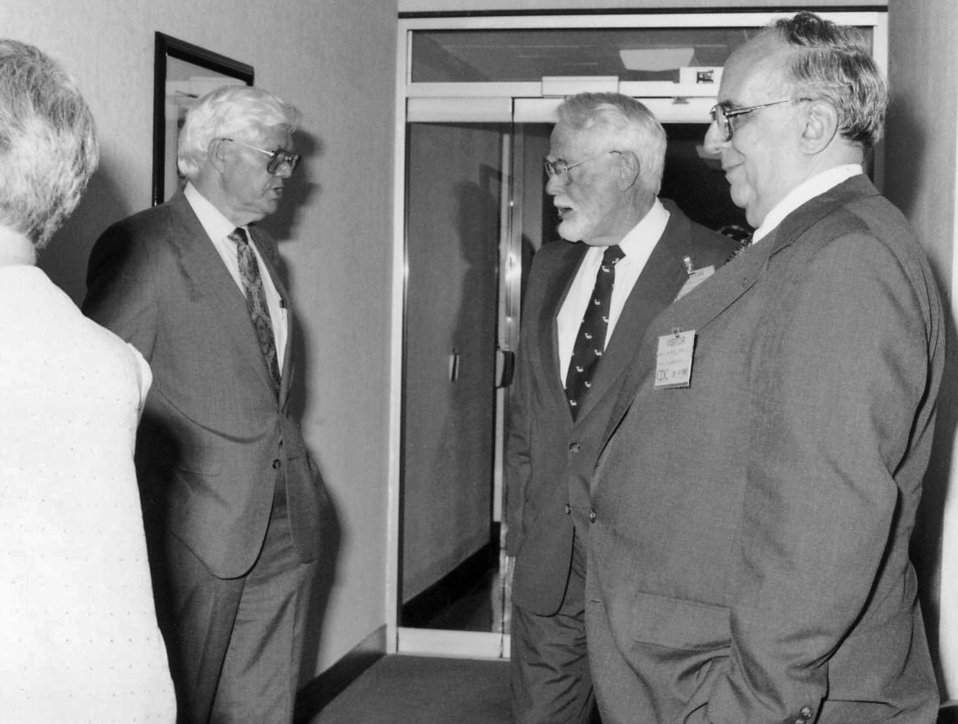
This 1992 photograph, taken during the Centers for Disease Control's 46th anniversary cermonies, showed (left to right) William Watson with former CDC Directors, Dr. James L. Goddard (1962 - 1966), and Dr. David J. Sencer (1966 - 1977).